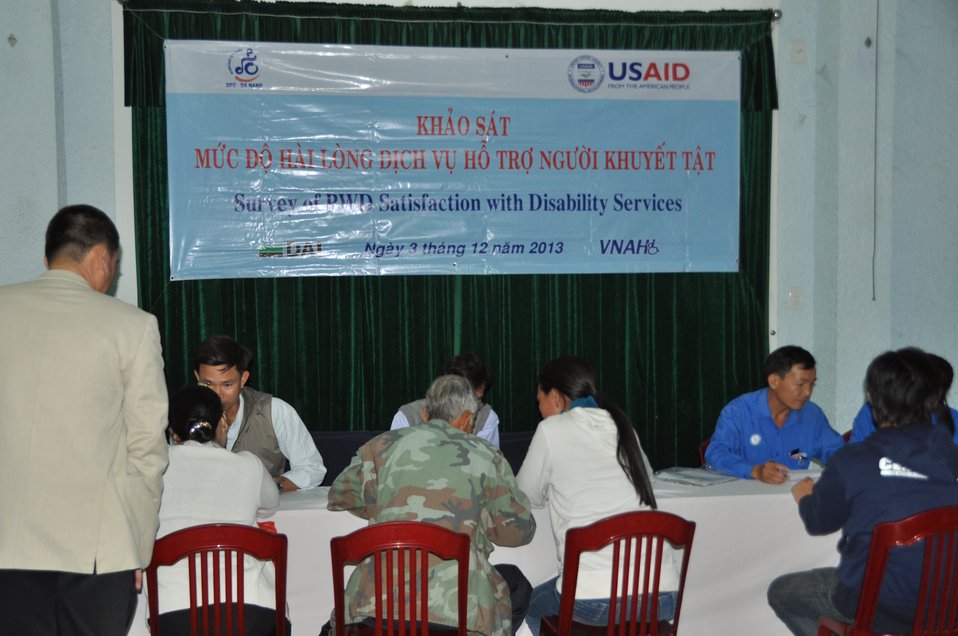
USAID supports the survey of PWD satisfaction with disability services.

Danang, December 3, 2013.